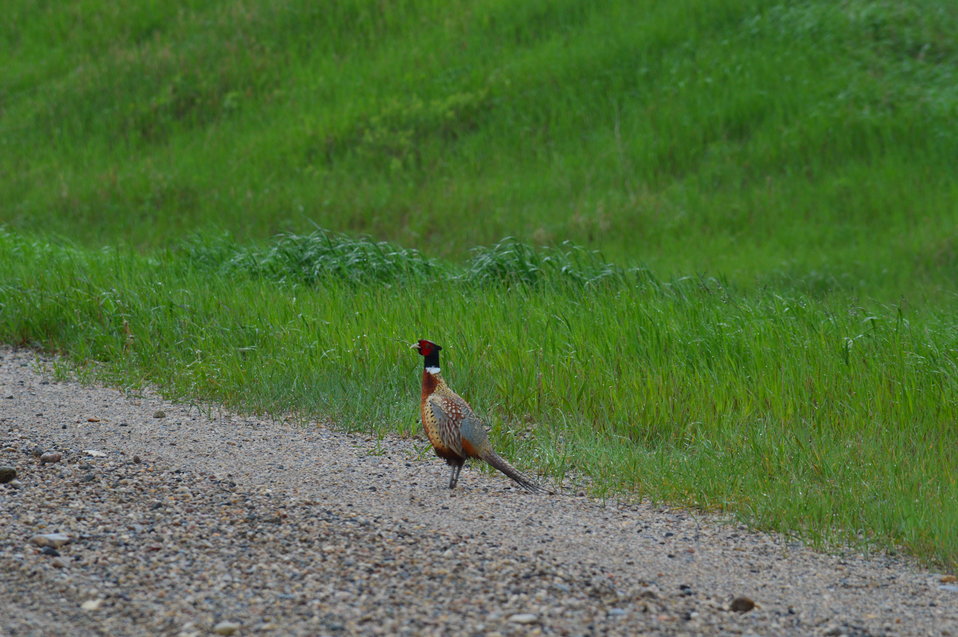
Ring-necked pheasant

Scenery and wildlife at Lost Lake National Wildlife Refuge in North Dakota.